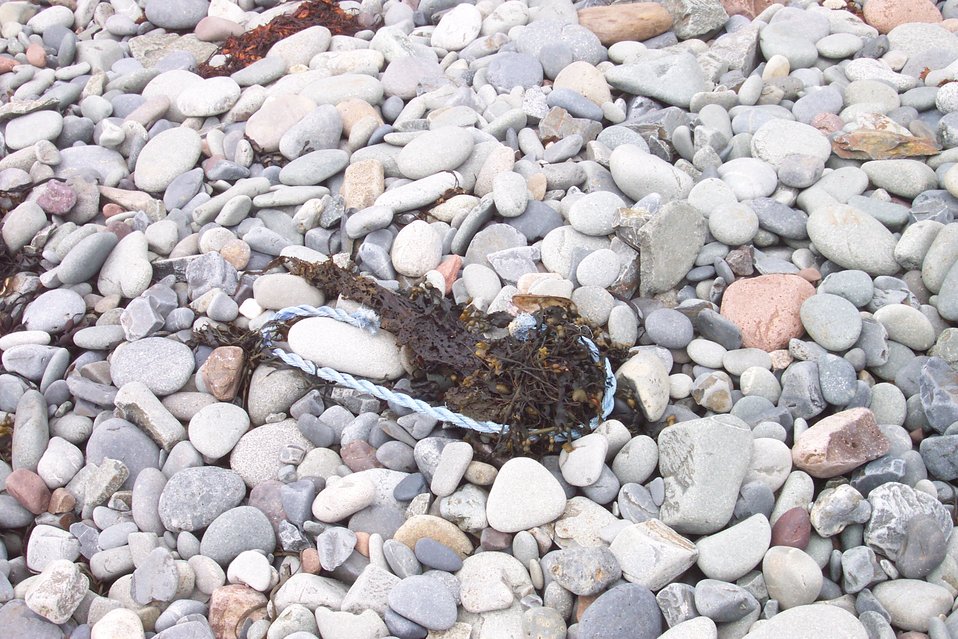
A cobble beach with kelp and flotsam at West Quoddy Head.